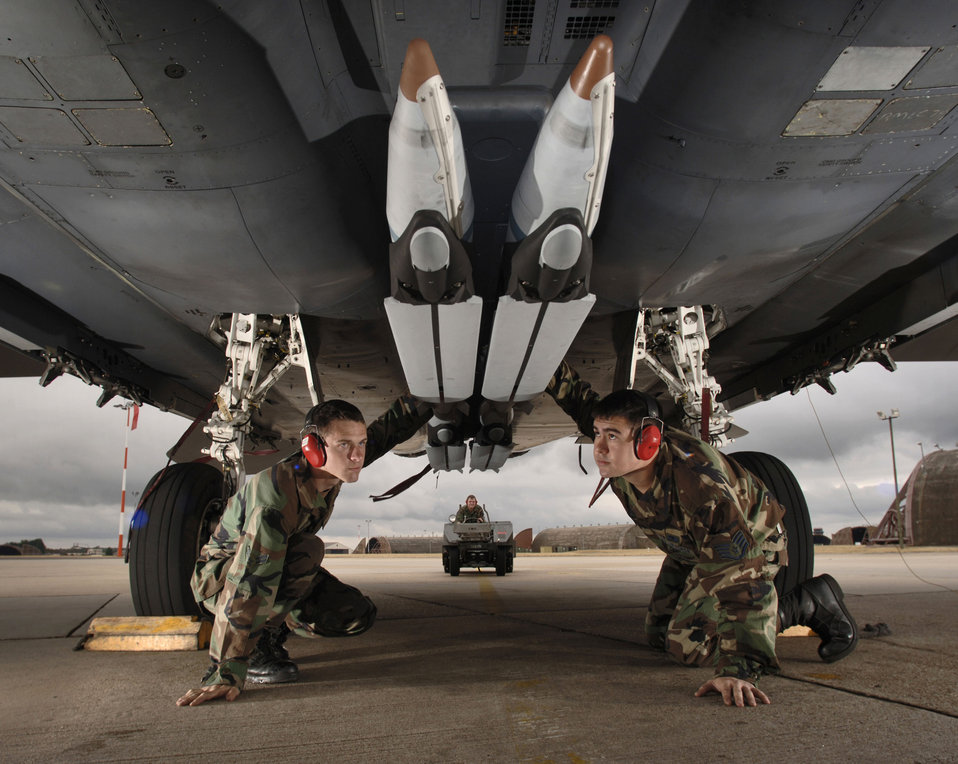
Small-diameter bomb makes Strike Eagle squadron more lethal

Airman 1st Class Matt Aggers (left) and Staff Sgt. Randy Broome perform a final check of the stowed twin wings on four ground-training Guided Bomb Unit-39 small-diameter bombs loaded on an F-15E Strike Eagle at Royal Air Force Lakenheath, England, on Aug. 1.